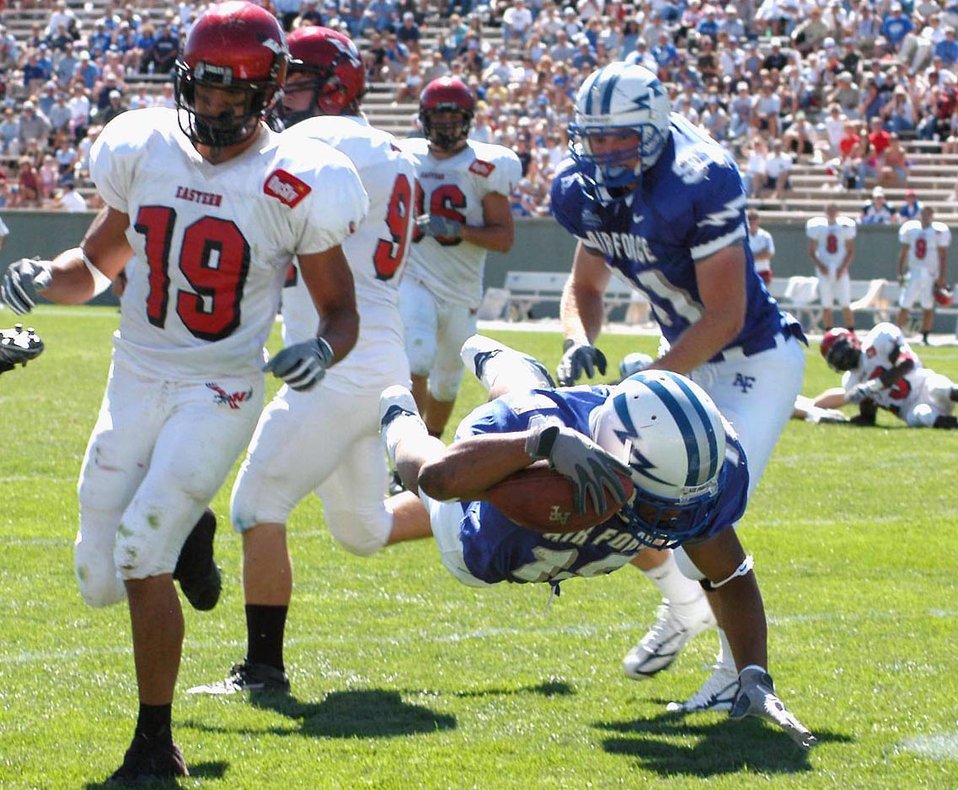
Falcon football fury

U.S. AIR FORCE ACADEMY, Colo. -- Air Force Academy sophomore halfback Justin Handley dives into the end zone after catching a pass from freshman quarterback Shaun Carney. Carney completed 10 of 15 passes for 139 yards and rushed for 62 yards. The Falcons beat Eastern Washington University, 42-20, and travel to the University of Nevada-Las Vegas on Sept. 18.